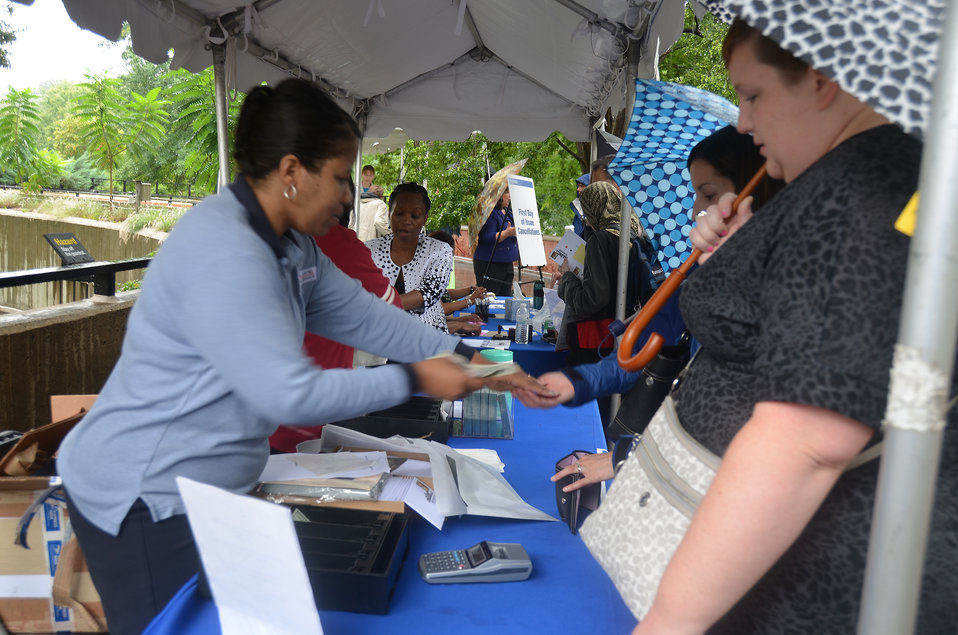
Save Vanishing Species Stamp First Day of Issue